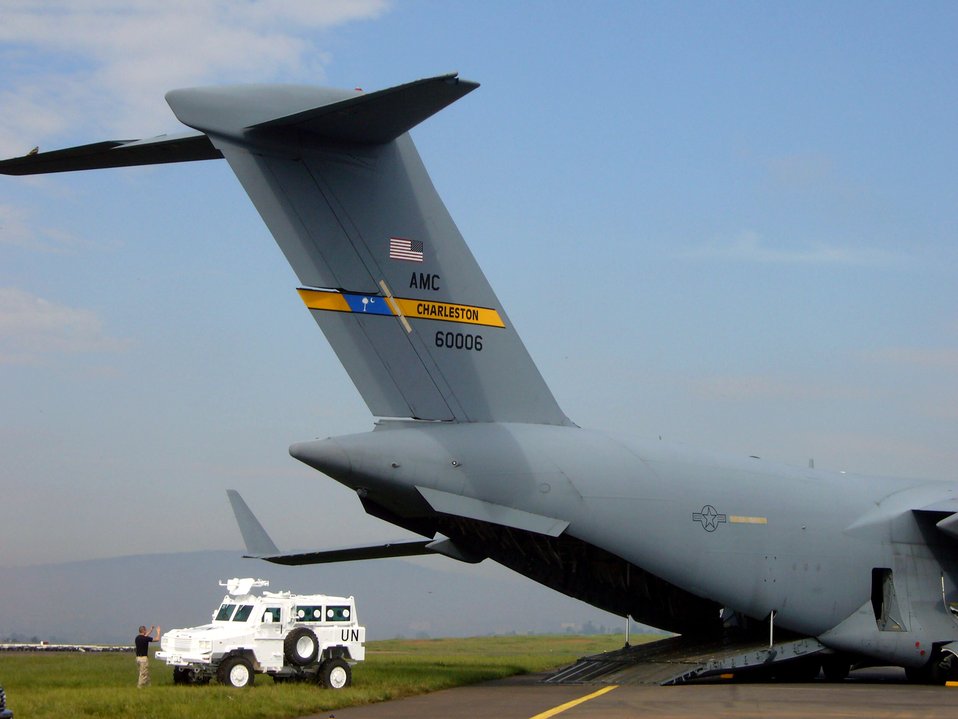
Air Force moves hybrid battalion into Darfur

Airmen from the 786th Air Expeditionary Squadron load United Nations armored personnel carriers into C-17 Globemaster III en route to the Darfur region of Sudan Oct. 24 at Kigali International Airport in Kigali, Rwanda.